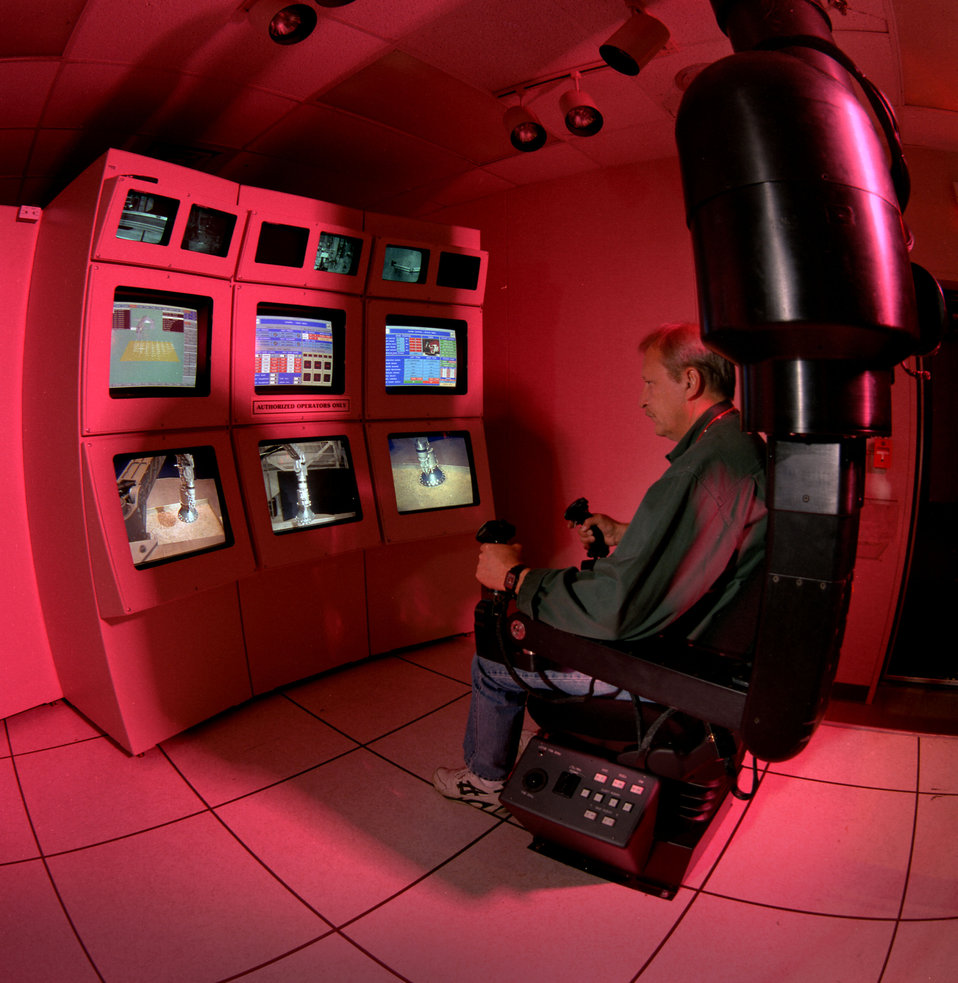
Robotics controll room at Oak Ridge National Lab.

95-502-3 DOE photo by Lynn Freeny

Robotics controll room at Oak Ridge National Lab. Oak Ridge Tennessee 10-15-1996